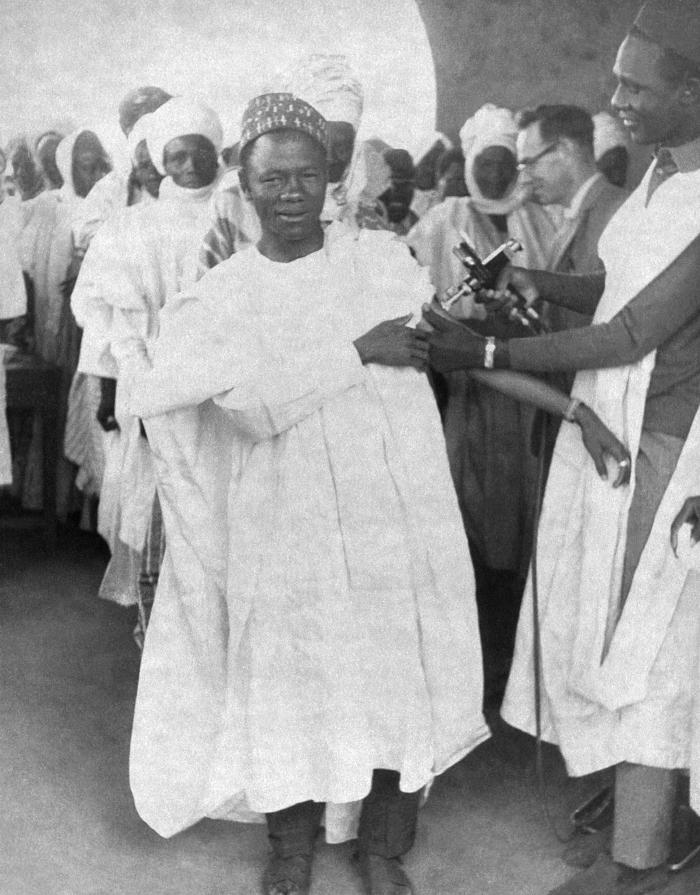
This Nigerian was receiving a smallpox vaccination during the country's 1967, Smallpox Eradication Program.